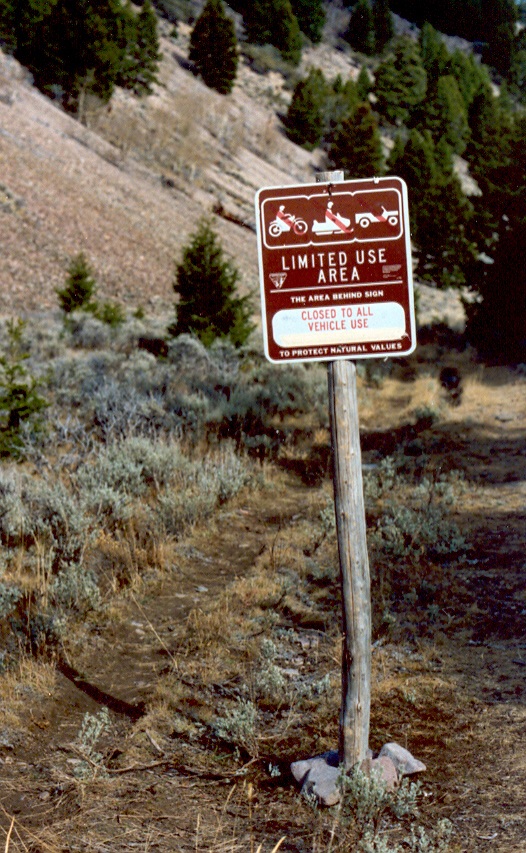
Recreation Site Sign Salmon Field Office UCSC Upper Columbia Salmon Clearwater District